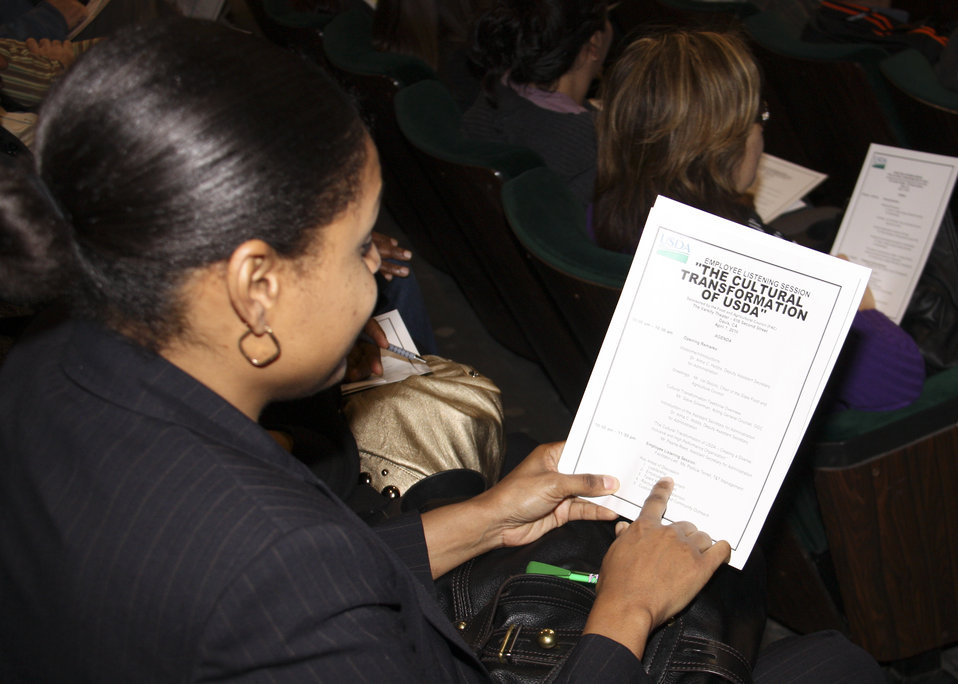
The U.S. Department of Agriculture (USDA) held the Cultural Transformation Employee listening sessions in Davis, CA, on Monday, April 12, 2010. USDA employees expressed their concerns with issues at the Department and made suggestions for correcting them and improving the image of USDA. USDA photo 10di1299-0870.